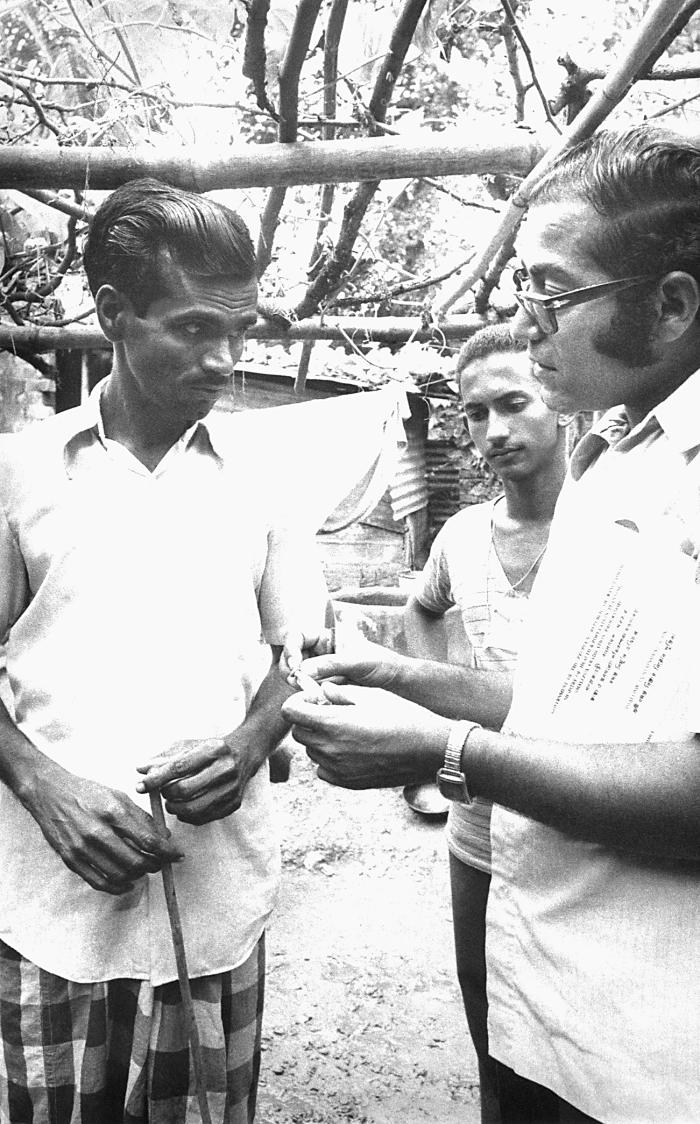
This photograph depicted World Health Organization (WHO) epidemiologist Dr. Ali Mourad while he was showing a community member a vial of smallpox vaccine just prior to teaching him how to dilute the vaccine, and perform vaccinations.In 1968, the World Health Organization (WHO), and other world public health organizations - led by the United States and the then-Soviet Union - came together to join in the fight to eradicate smallpox from the world. The worldwide eradication of this dreaded virus was due to this Smallpox Eradication Campaign, whereupon, a mass-vaccination program was instituted across the globe that lead to the declaration in 1978 by a global commission that smallpox had been eradicated, which was officially accepted by the 33rd World Health Assembly in 1980. Smallpox is a serious, contagious, and sometimes fatal infectious disease.